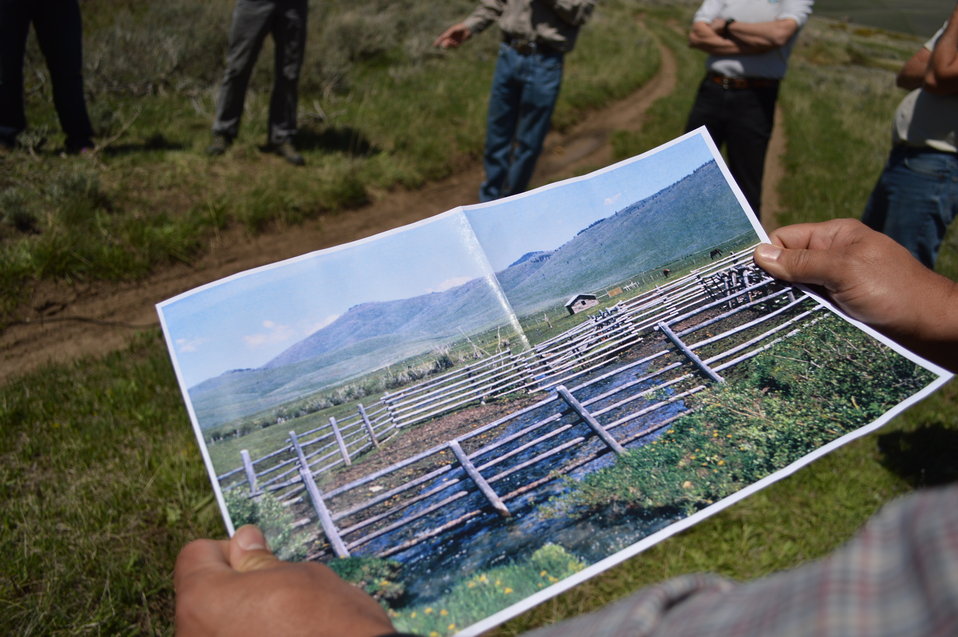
Regional Leadership Visit to Montana 2014